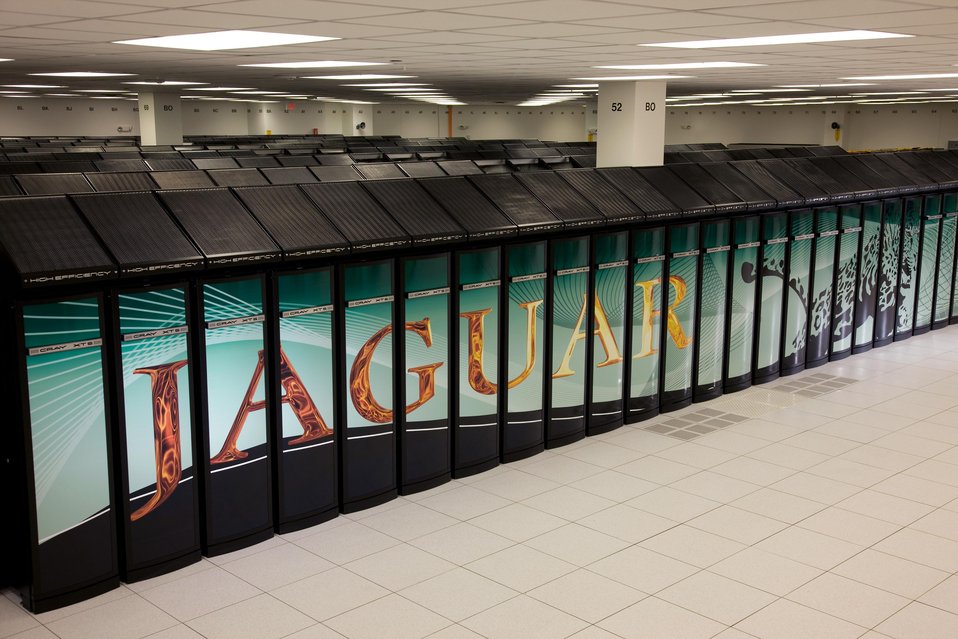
Latest upgrade -Cray XT Jaguar supercomputer at ORNL has increased the computer power to a petaflops -quadrillion mathematical calculations per second, Jaguar - worlds first petaflops dedicated to open research.
The new petaflops machine will make it possible to address some of the challenging scientist's problems in areas such as climate modeling, renewable energy, materials science, fusion and combustion. Jaguar is a partnership with DOE, ORNL and Cray that has pushed the computing capability at a rapid pace. The current upgrade is the result of an addition of 200 cabinets of Cray XT5 to the existing 84 cabinets of the XT4 Jaguar system.